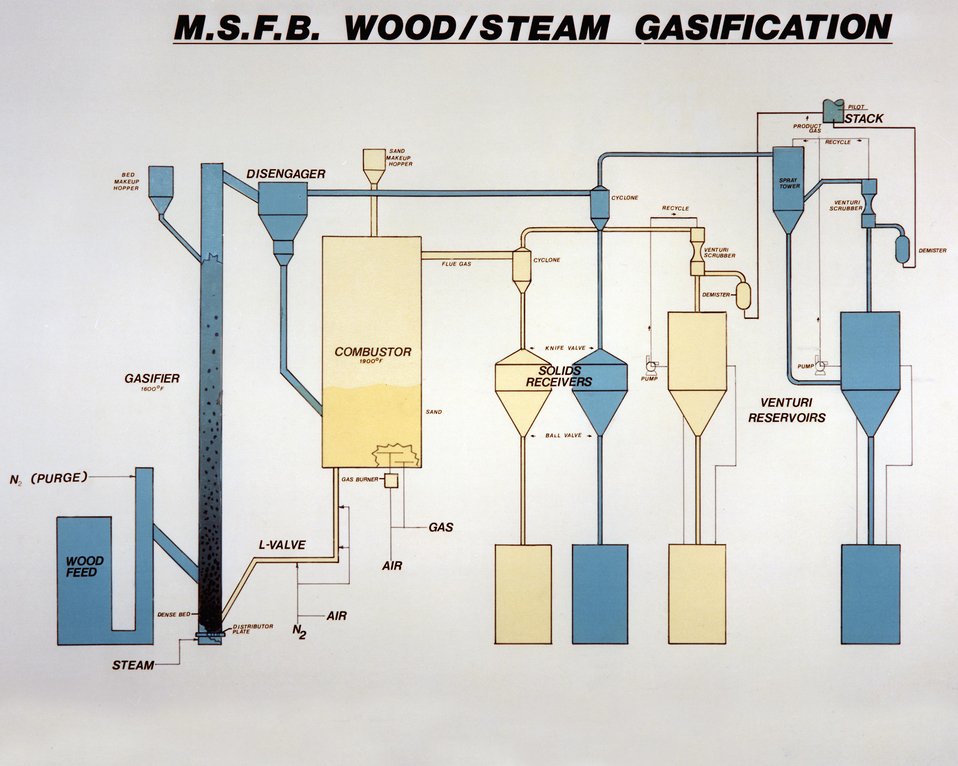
DIAGRAM OF THE M.S.F.B. WOOD/STEAM GASIFICATION PROCESS.

THE MULTI-SOLID FLUIDIZED-BED GASIFICATION TECHNOLOGY IS A METHOD OF CONVERTING BIOMASS, E.G., WOOD CHIPS, INTO METHANE-RICH GAS THAT COULD BE USED IN PLACE OF NATURAL GAS.THE METHOD USES A CHEMICAL CATALYST IN A REACTOR SYSTEM TO GASIFY BIOMASS. THIS REACTOR IS LESS COMPLEX IN DESIGN THAN A COAL GASIFICATION PROCESS AND ALLOWS THE USE OF SMALLER UNITS.